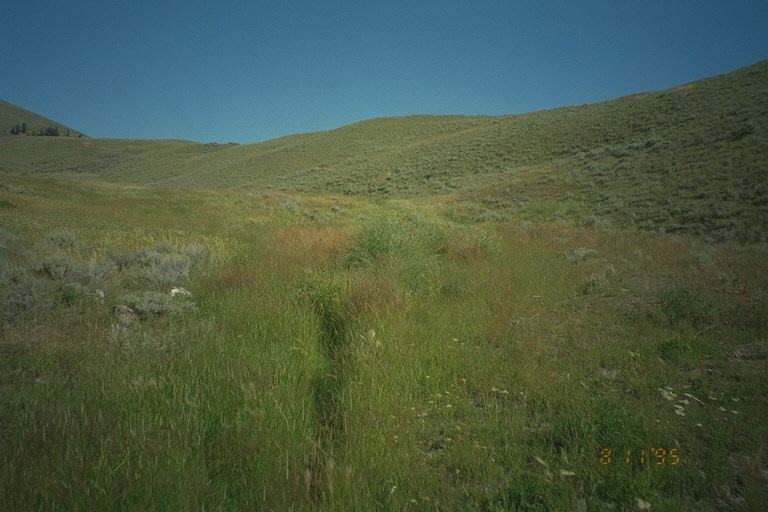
Riparian area Public Lands Salmon Field Office UCSC Upper Columbia Salmon Clearwater District